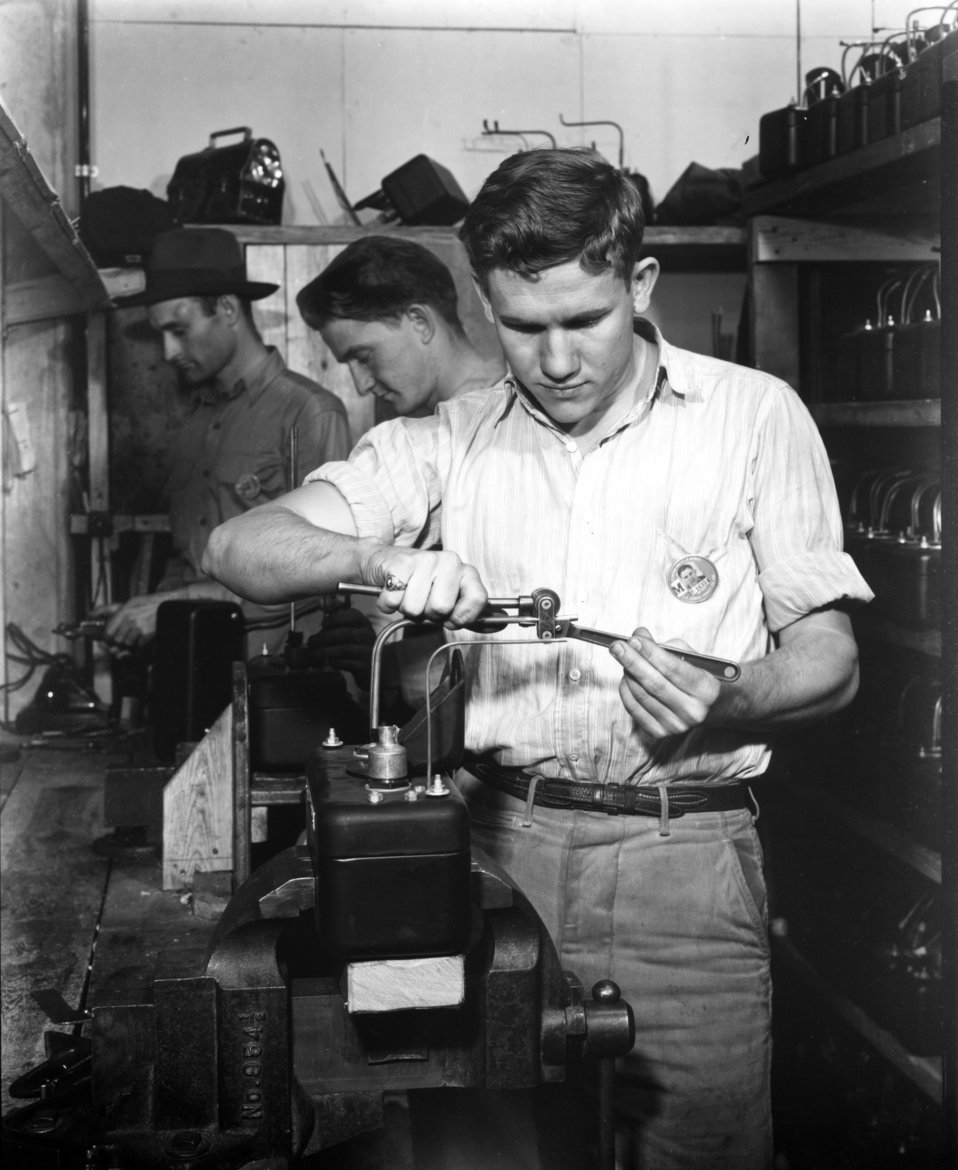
K-25 at Oak Ridge